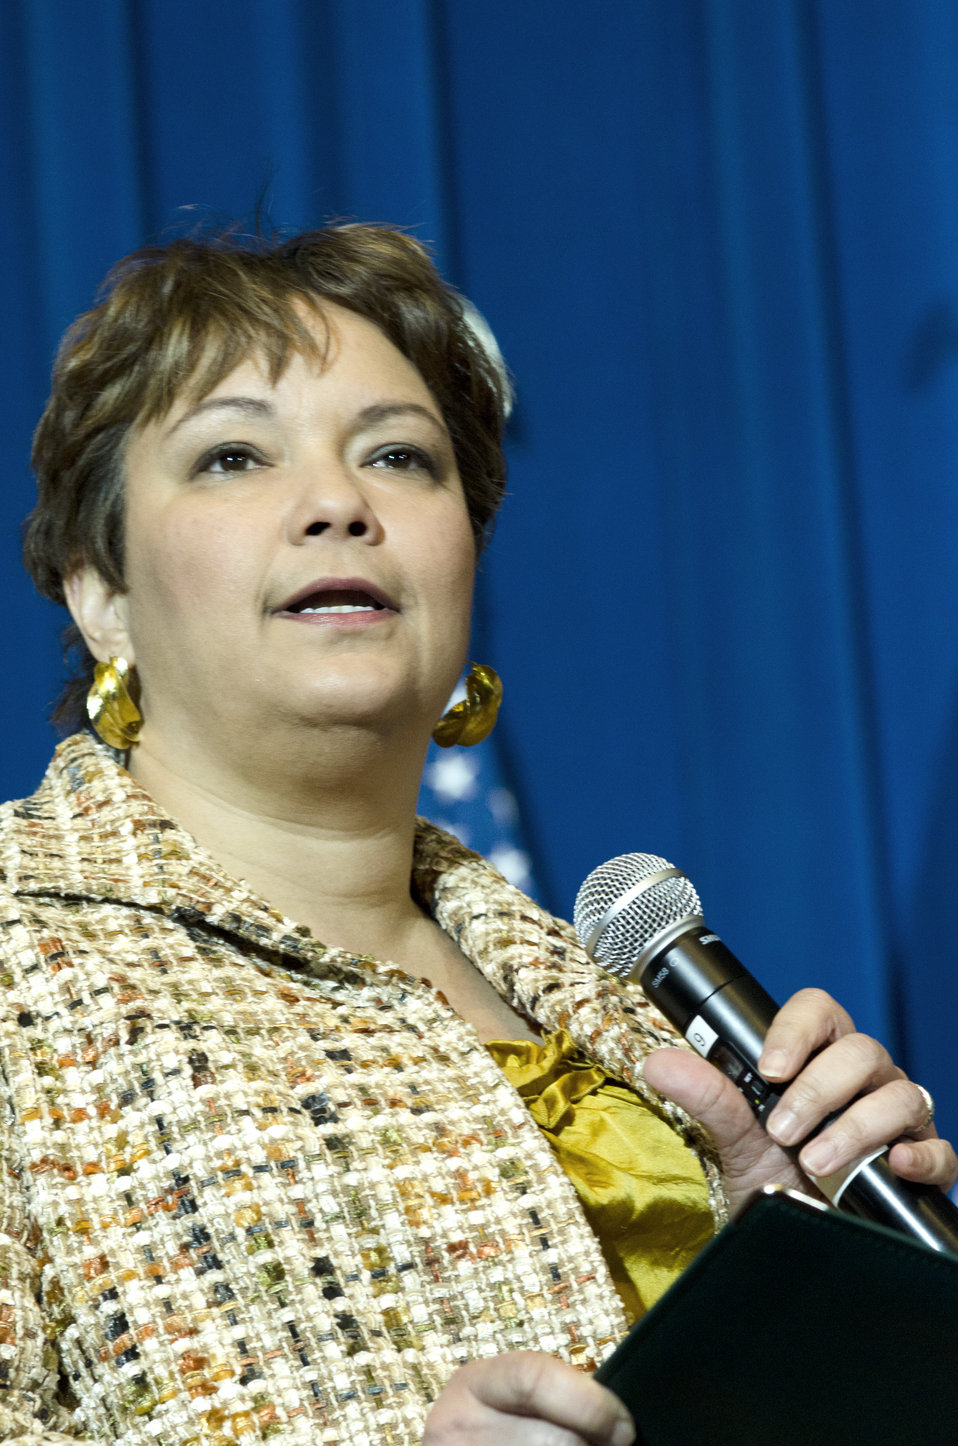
Environmental Protection Agency Administrator Lisa Jackson made opening remarks at the White House Conservation Summit “Growing America’s Outdoor Heritage and Economy” held at the Interior Department in Washington, D.C. on Friday, March 2, 2012. This conference was part of President Barrack Obama’s, “America’s Great Outdoors Initiative” to spotlight community-driven conservation efforts and discussed how to build their success.